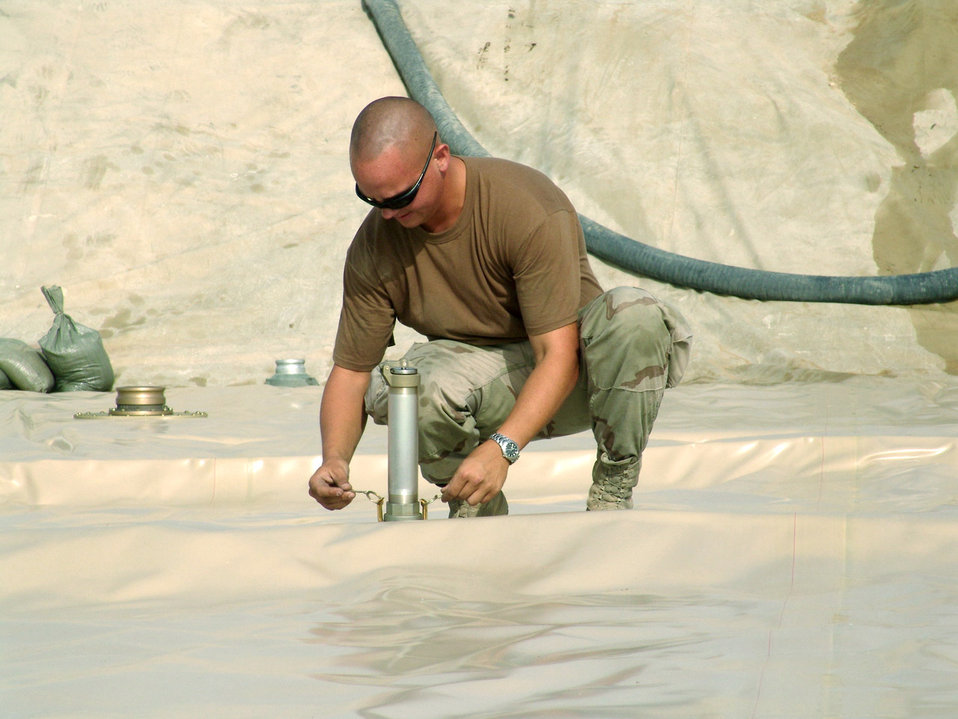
Bladder control

SOUTHWEST ASIA -- Airman 1st Class Justin Speck installs a vent stack on a new 210,000-gallon fuel bladder at a deployed location here. The stack balances air pressure when fuel is pumped into the bladder. Airman Speck is assigned to the 386th Expeditionary Logistics Fuels Flight. The flight is responsible for fueling both motor vehicles and aircraft for the 386th Air Expeditionary Wing.